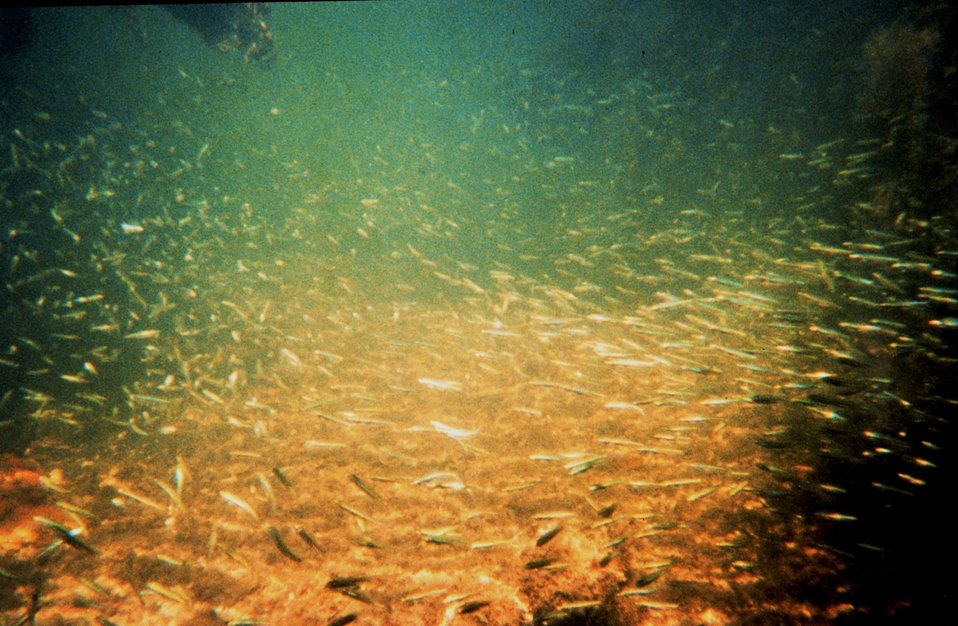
Minnows that constitute the forage base for larger predators